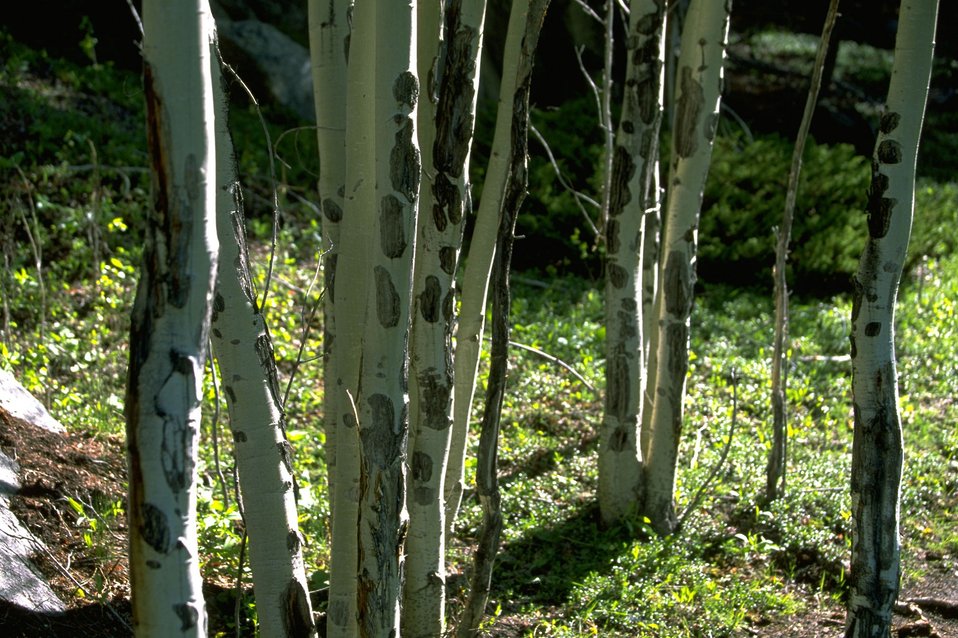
Aspen tree trunks